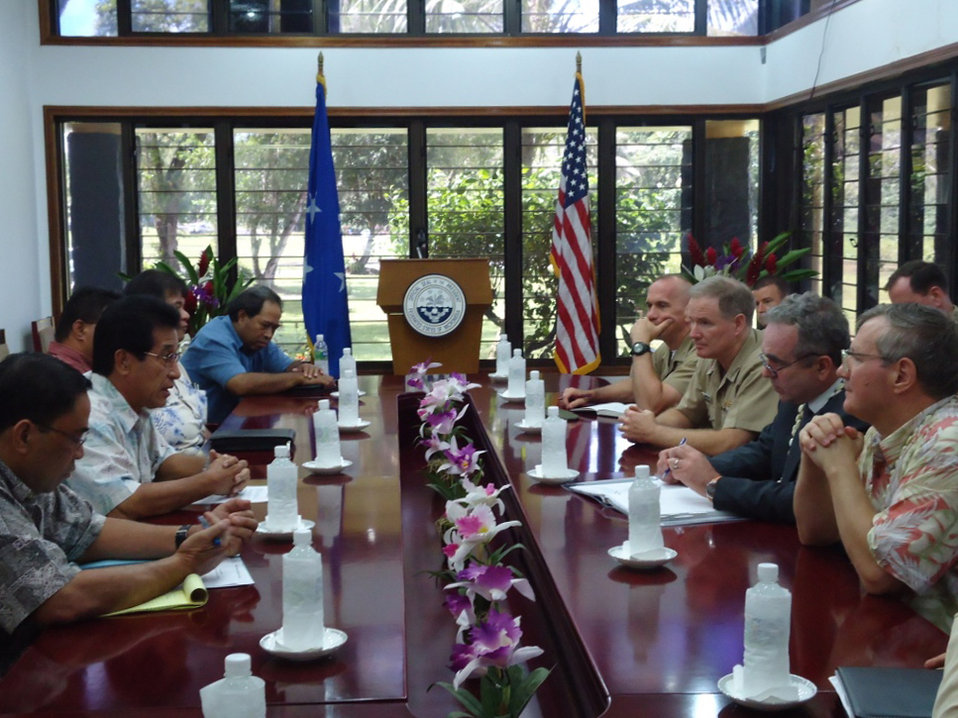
Assistant Secretary Campbell Meets With Federated States of Micronesia President Mori and His Executive Cabinet

Assistant Secretary of State for East Asian and Pacific Affairs Kurt Campbell, right center, meets with Federated States of Micronesia President Emanuel Mori, left center, and his Executive Cabinet in Palikir, Pohnpei, on July 1, 2011. Assistant Secretary Campbell is leading an inter-agency Pacific Island tour to enhance bilateral political, economic, and security relations in the region. The U.S. Delegation includes: Pacific Fleet Commander Admiral Patrick Walsh, Office of the Secretary of Defense South/Southeast Asia Principal Director Brigadier General Richard Simcock, and U.S. Agency for International Development (USAID) Assistant Administrator for Asia Nisha Biswal.